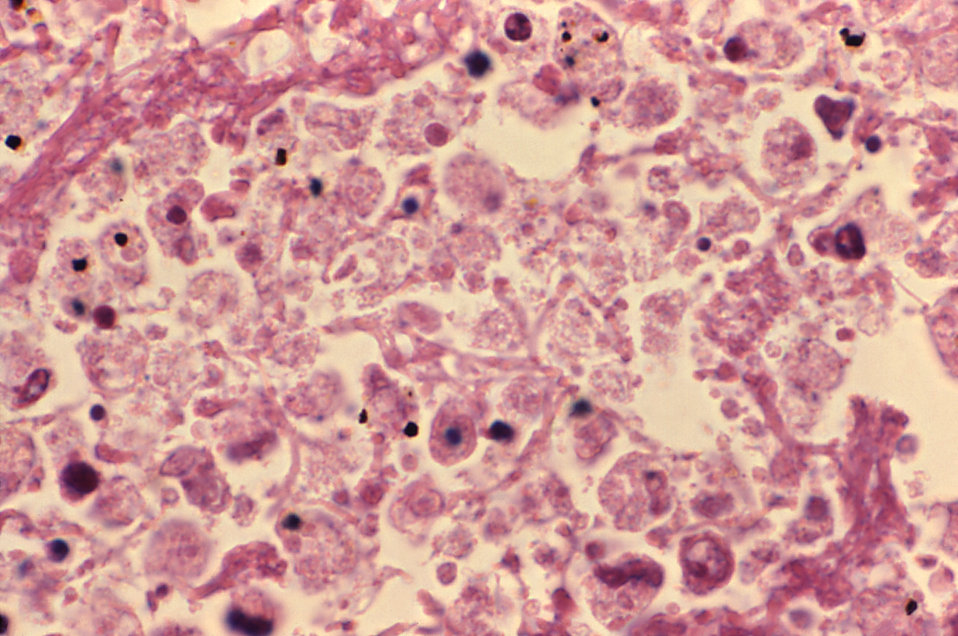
This micrograph depicted details seen in a lung tissue specimen from a Knoxville patient with fatal pneumonia due to Legionnaires' disease. The tissue was stained using hematoxylin-eosin (H&E) stain. Legionella pneumophila are Gram-negative bacteria. Using H&E stain, these organisms, if present in the specimen, would stain a pink or red color. Note how the alveolar spaces are so congested with a leukocytic infiltrate in response to the infection.How serious is it? What is the treatment?